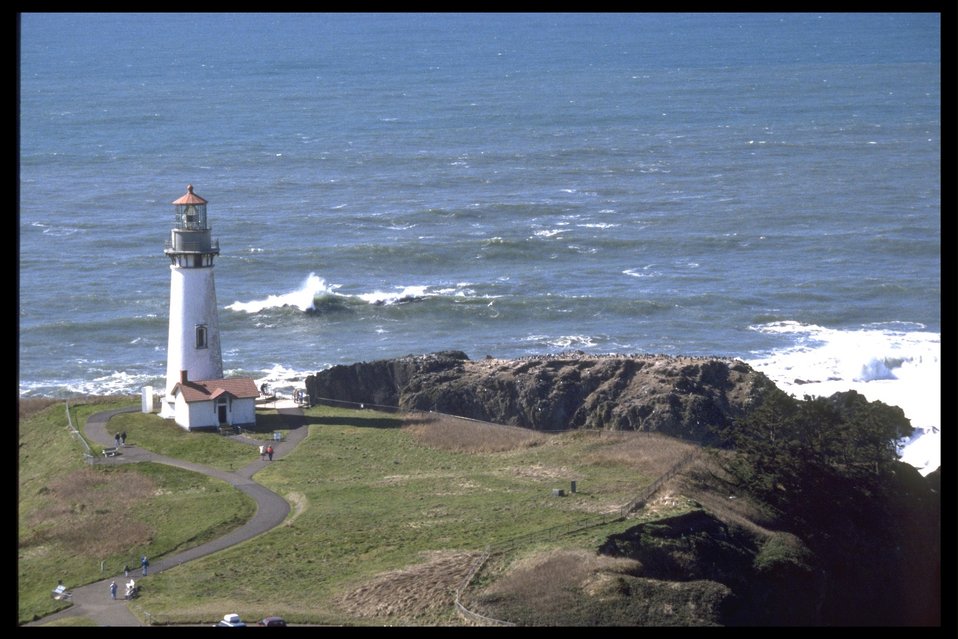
Yaquina Head Lighthouse.